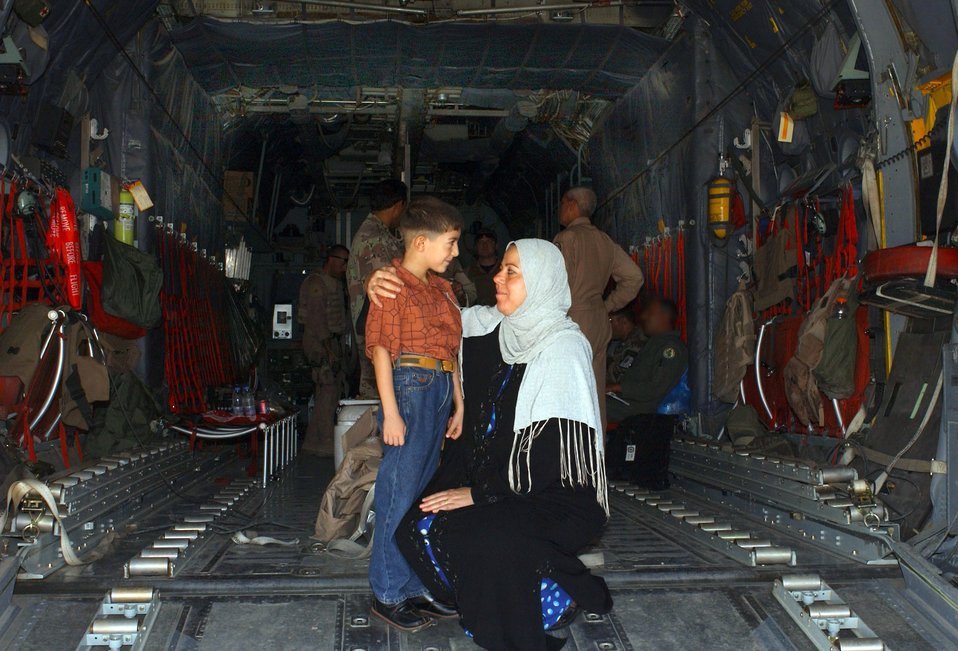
Iraqi, AF C-130 crew flies boy to receive heart surgery

ALI BASE, Iraq -- Baher, 8, waits with his mom, Afaf, aboard an Iraqi C-130 Hercules flown by a joint Iraq-U.S. crew to begin the first leg of a journey to New Orleans where Baher will receive heart surgery. Ali Base is home to the 407th Air Expeditionary Group that trains more than 100 Iraqi airmen to maintain and fly the C-130.